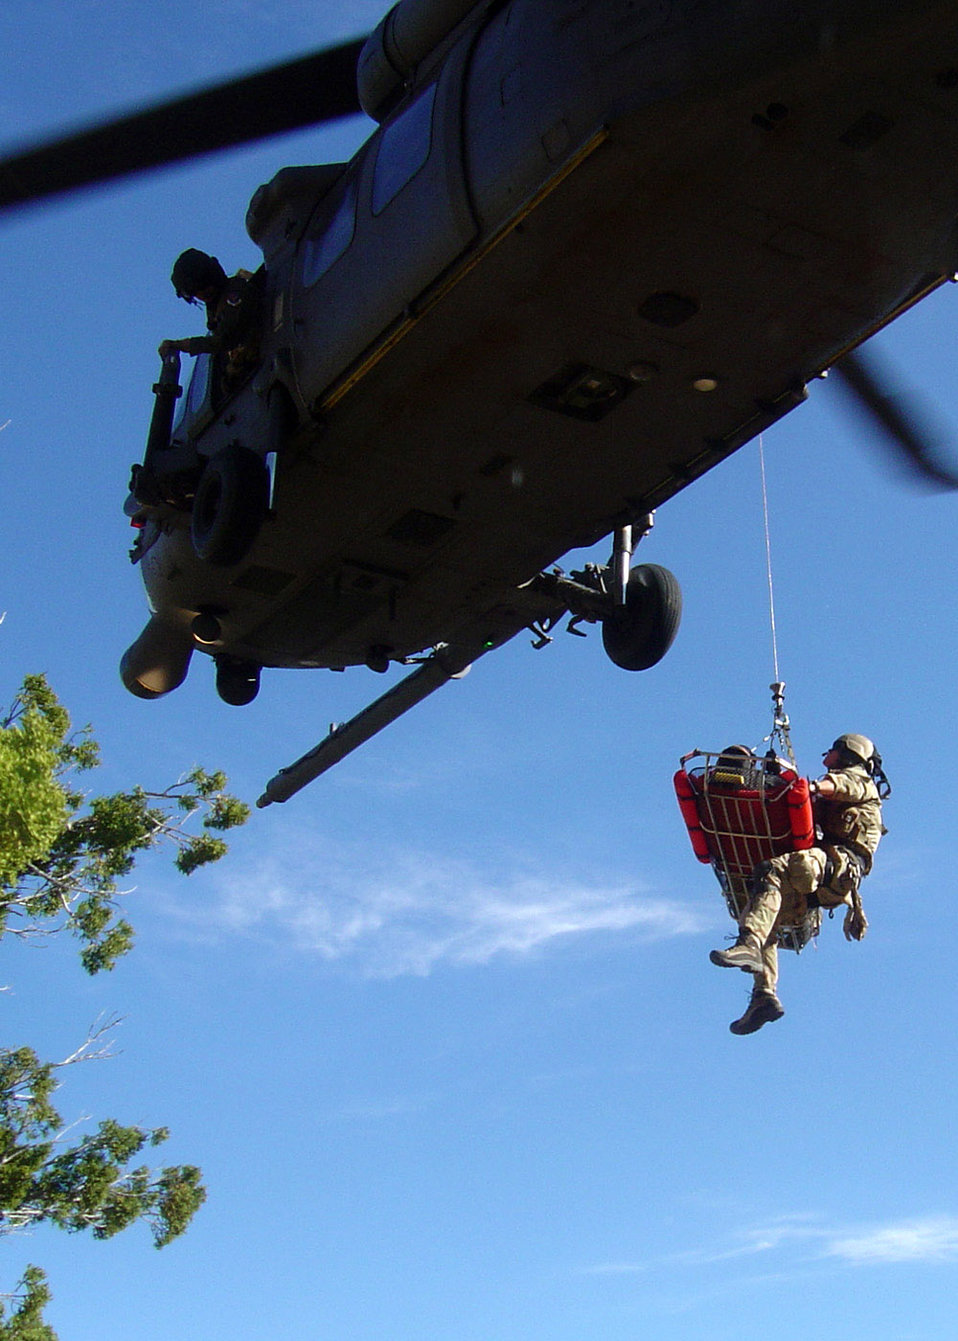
Pararescue Airmen, first responders train together in Arizona

A 48th Rescue Squadron pararescuman and an injured hiker are hoisted into a hovering HH-60 Pave Hawk during an exercise to strengthen relations between Davis-Monthan Air Force Base Airmen and local civilian rescue agencies April 2 at Coronado National Forest in Arizona. The hiker was airlifted to University Medical Center in Tucson, Ariz., to complete the exercise.